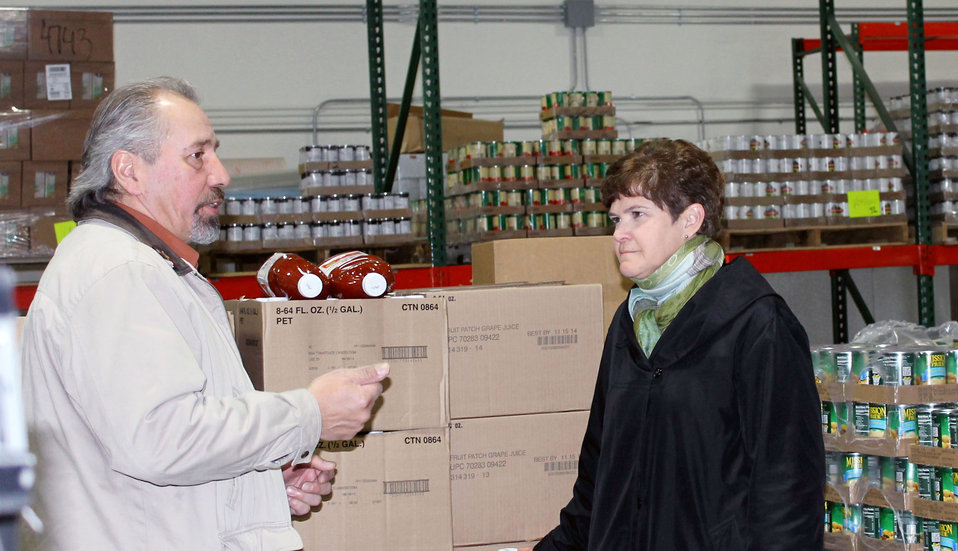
Agriculture Deputy Secretary Krysta Harden and Oneida Nation Vice Chair Greg Matson visit a Food Distribution Center in Green Bay, WI on Tuesday, Apr. 15, 2014.